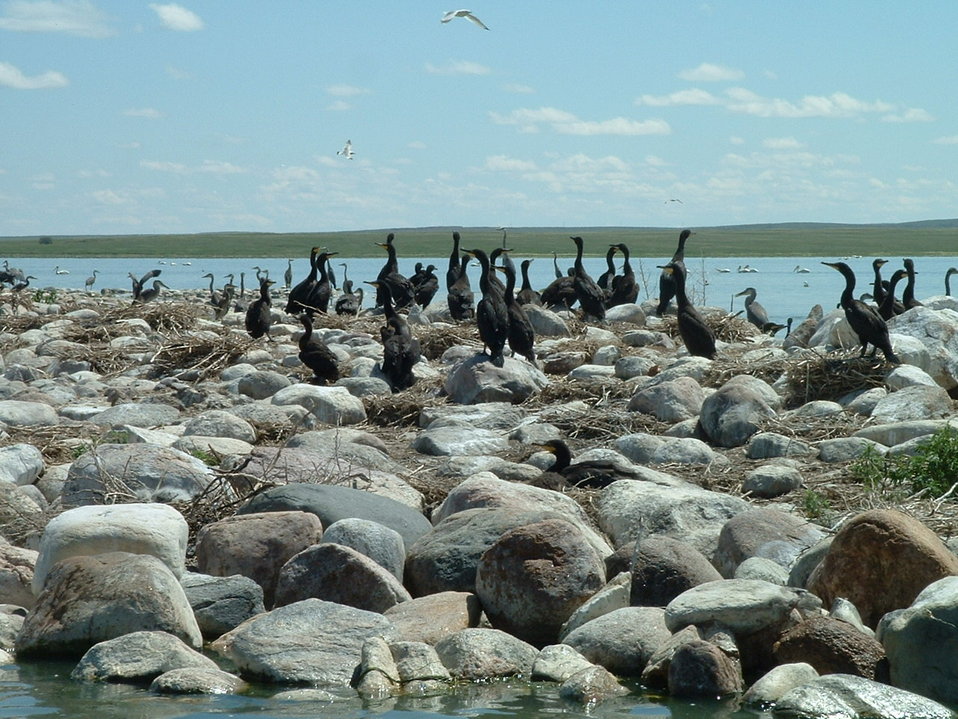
Colonial Nesters, Bowdoin NWR

Double-crested cormorants and Great blue herons nesting on an island in Lake Bowdoin. Bowdoin NWR.